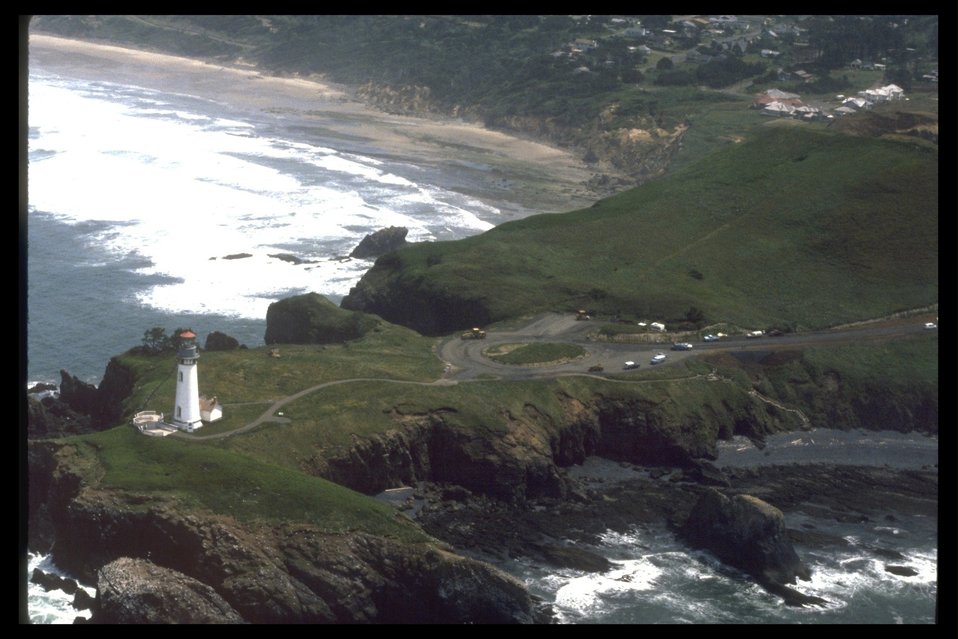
Aerial photo of Yaquina Head Lighthouse.